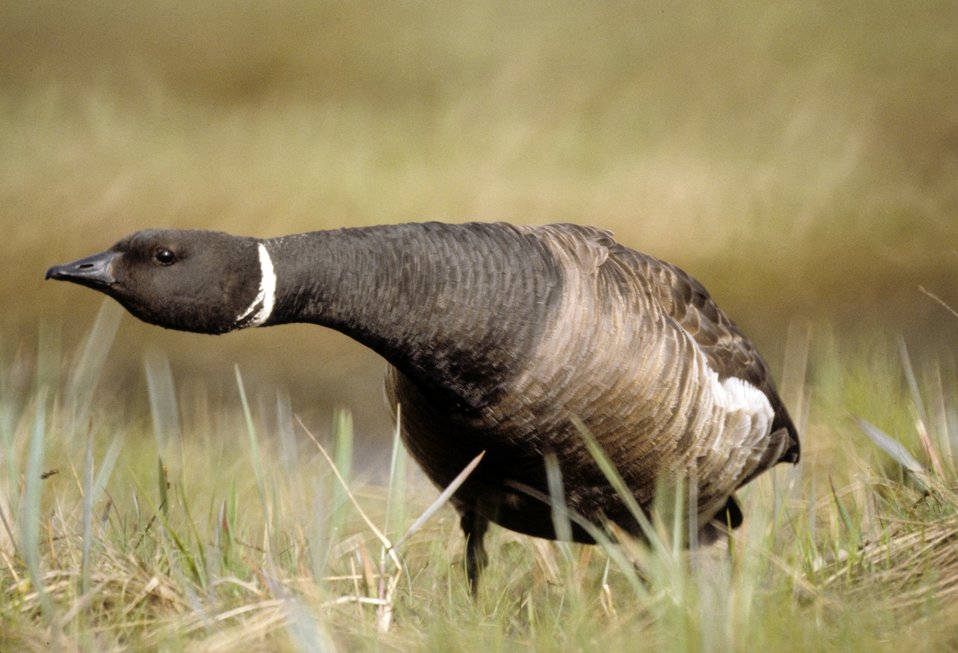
Brant on defense, Alaska refuges

A brant crouches defensively on a national wildife refuge along the Alaska coast.